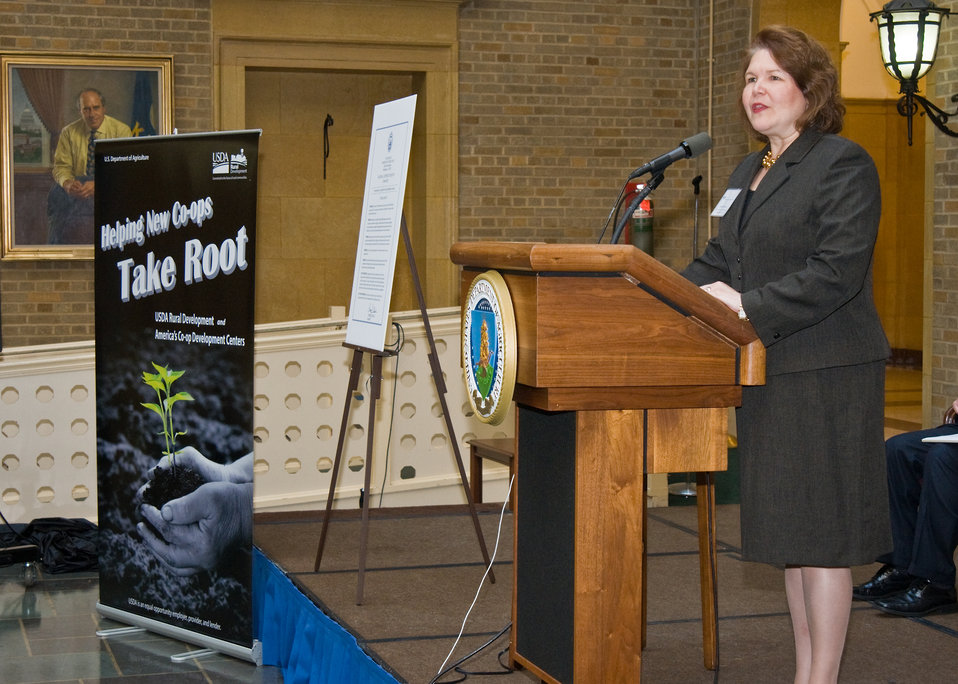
Judith Canales, Administrator, Rural Business and Cooperative Service welcomes and offers opening comments on the celebration of October as National Co-op Month at an event at the Department of Agriculture, Tuesday, October 5, 2010 in Washington, DC. USDA Photo 10di1517-38 by Bob Nichols.